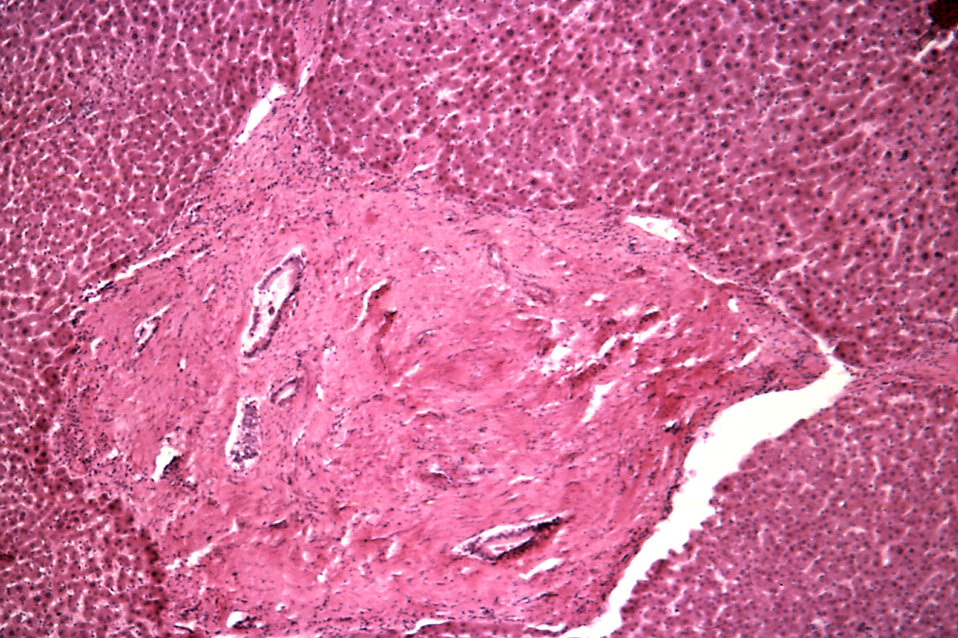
This micrograph reveals signs of Schistosomiasis infection of the liver, also known as "pipe stem" cirrhosis; Mag. 500X.